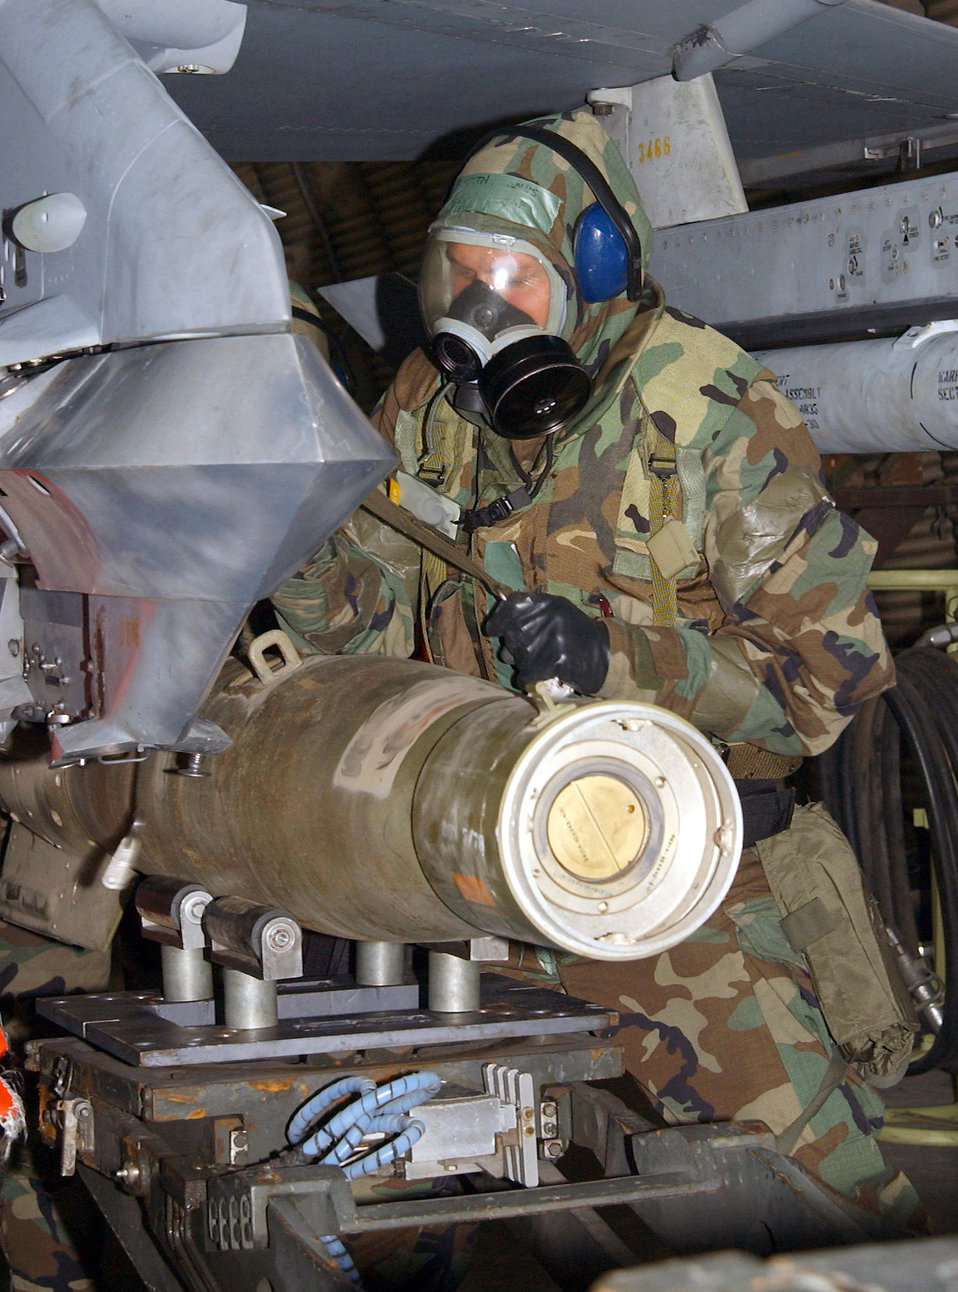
Getting loaded

KUNSAN AIR BASE, South Korea -- Staff Sgt. James Smith loads a GBU-12 onto an F-16 Fighting Falcon during a recent exercise. He is assigned to the 8th Maintenance Operations Squadron here.